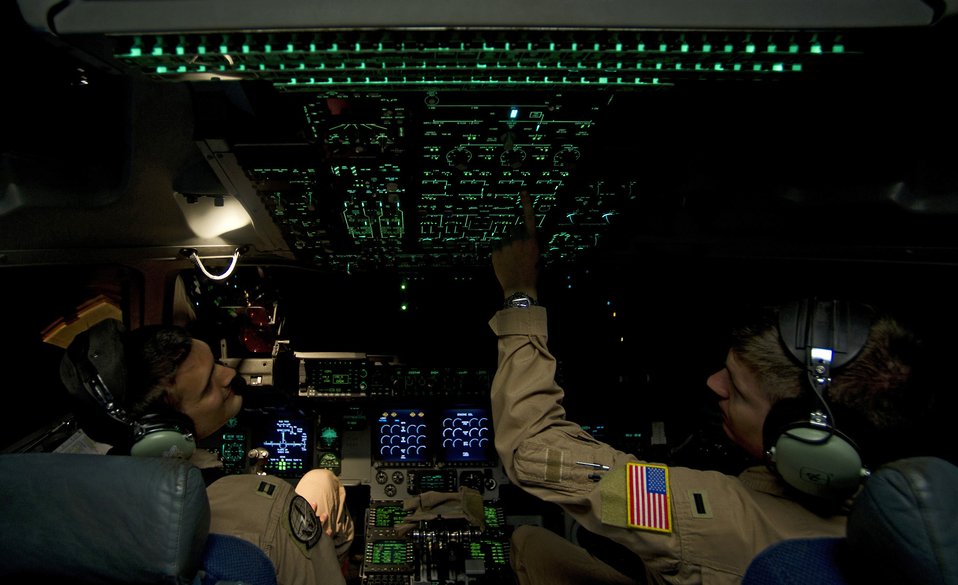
Preparing for takeoff

Capt. Travis Kuenzi and 1st Lt. Alexander Hanna conduct engine start-up procedures on a C-17 Globemaster III March 5, 2011, prior to an air delivery mission to a remote forward operating base in Afghanistan. Captain Kuenzi and Lieutenant Hanna are assigned to the 816th Expeditionary Airlift Squadron.